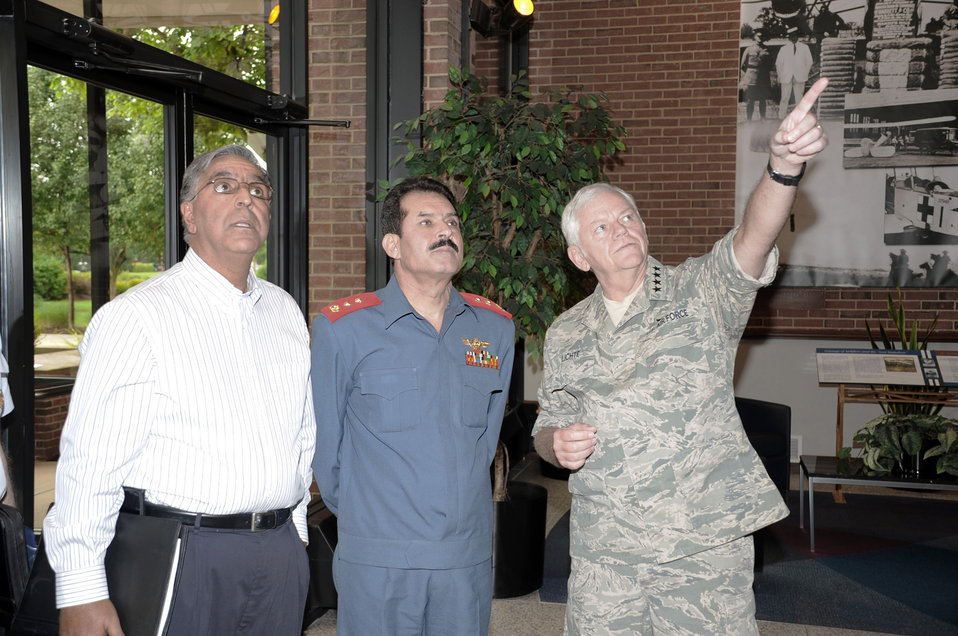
Afghan Air Corps leader visits Scott AFB

Upon entering the Air Mobility Command headquarters building at Scott Air Force Base, Ill., Gen. Arthur J. Lichte, AMC commander, points out a piece of air mobility history to Maj. Gen. Mohammad Dawran, commander of the Afghan National Army Air Corps, and M. Monir Rafiq, Department of Defense interpreter, during the Afghan delegation's visit here July 15. General Dawran's was visiting to continue an open dialog between senior military leaders of the two countries and to reinforce airlift concepts that are being applied throughout Afghanistan. U.S.